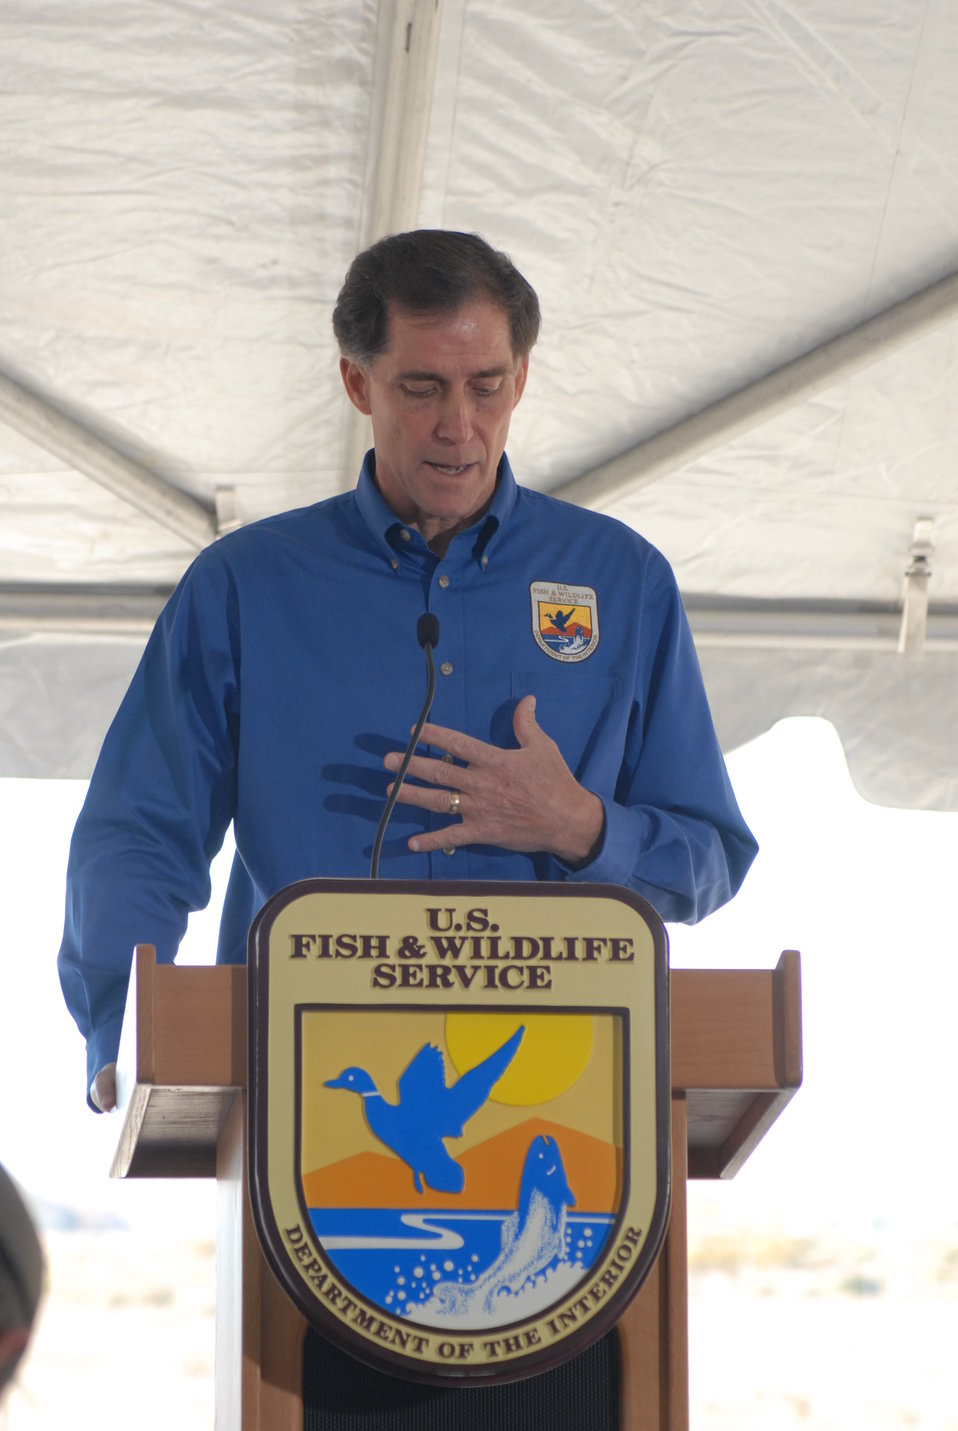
U.S. Fish and Wildlife Service Director Dan Ashe speaks at the U.S. Ivory Crush.